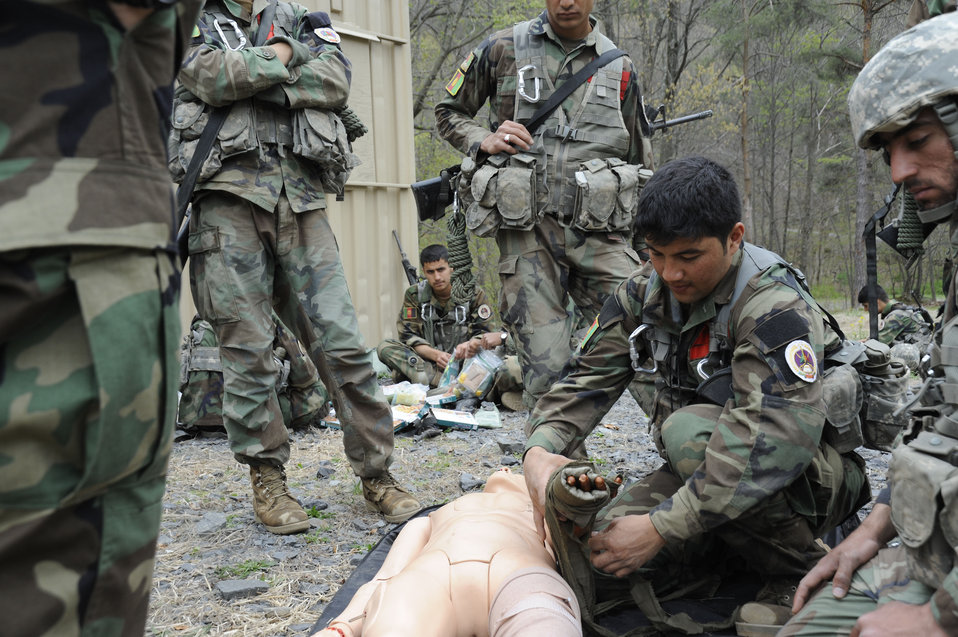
2012 Sandhurst Competition

Afghan cadets use a medical mannequin to train for the tactical combat casualty care portion of the 2012 Sandhurst Competition at the U.S. Military Academy April 18, 2012, in West Point, N.Y. Cadets from military academies and colleges from around the world were invited to participate.